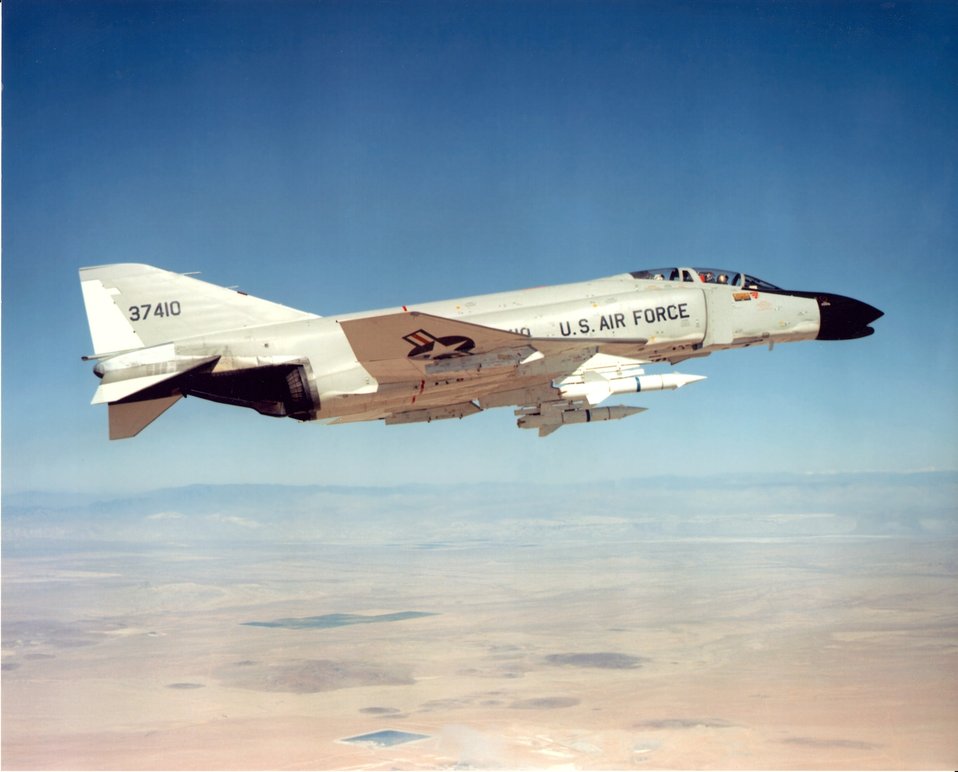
F-4C testing at Edwards AFB

Adapted from the U.S. Navy's F-4H-1 to meet an urgent requirement in Southeast Asia, the Air Force F-4C fighter from McDonnell Douglas underwent testing at Edwards Air Force Base, Calif., in the mid-1960s.